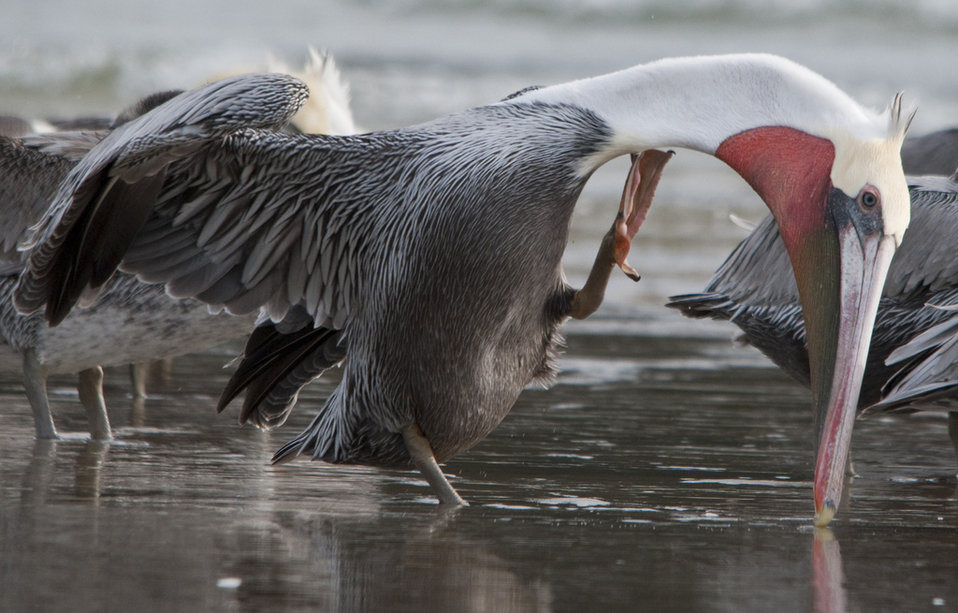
California Brown Pelican

A California brown pelican scratches its long neck.
Three Arch Rocks National Wildlife Refuge, OR